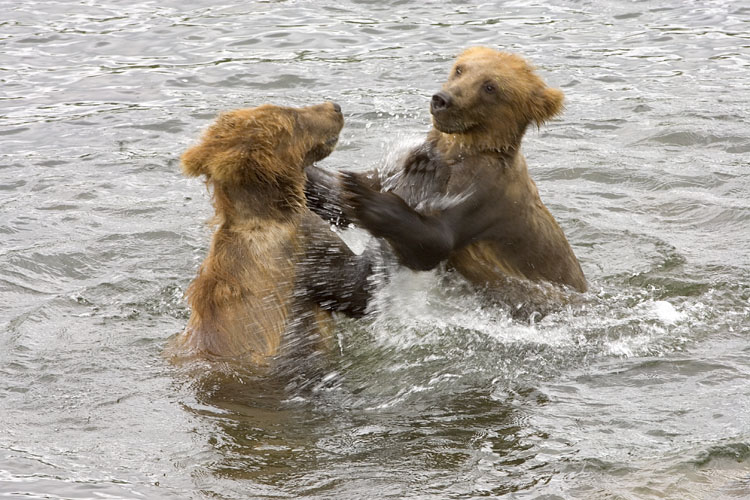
Wildlife of Kodiak Refuge

Playful Kodiak Bears